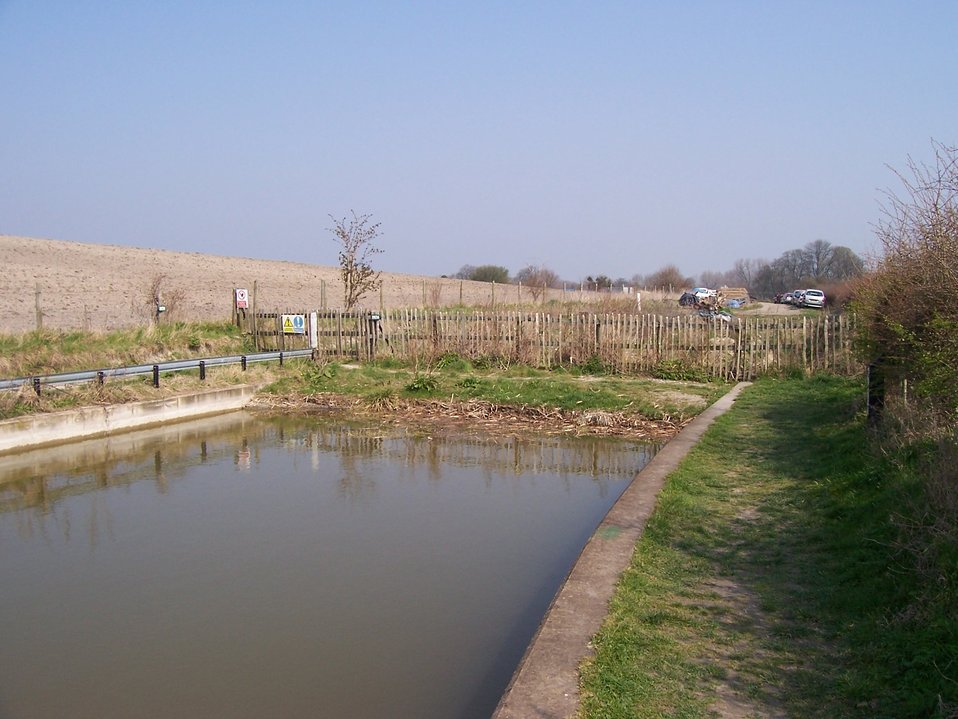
Wendover Canal; End of Phase 1 as 0f 02/04/2007